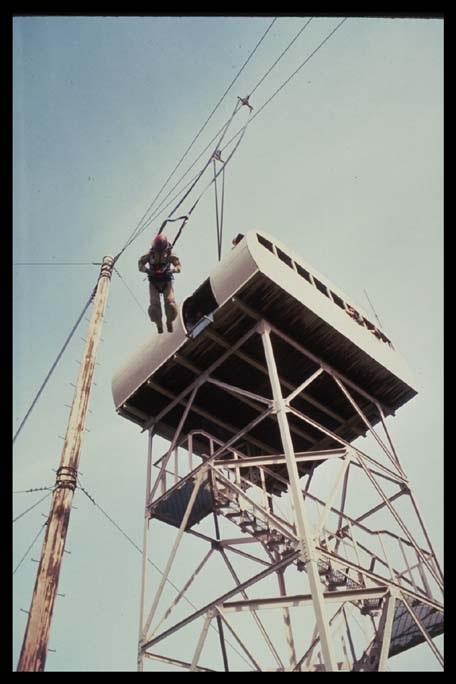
Lookout tower